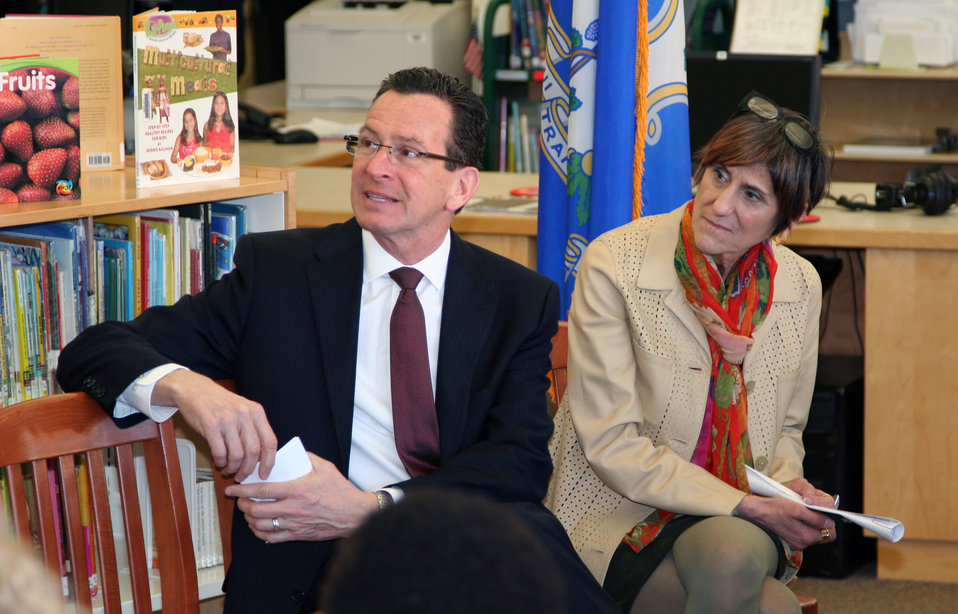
Governor Dannel Malloy and Congresswoman Rosa DeLauro listen as Agriculture Secretary Tom Vilsack outlines USDA efforts to raise a healthier generation of Americans and highlights efforts to improve school meals during his visit to the Henry A. Wolcott Elementary School in West Hartford, Connecticut to outline the U.S. Department of Agriculture (USDA) efforts to raise a healthier generation of Americans on Friday, April 5, 2013.